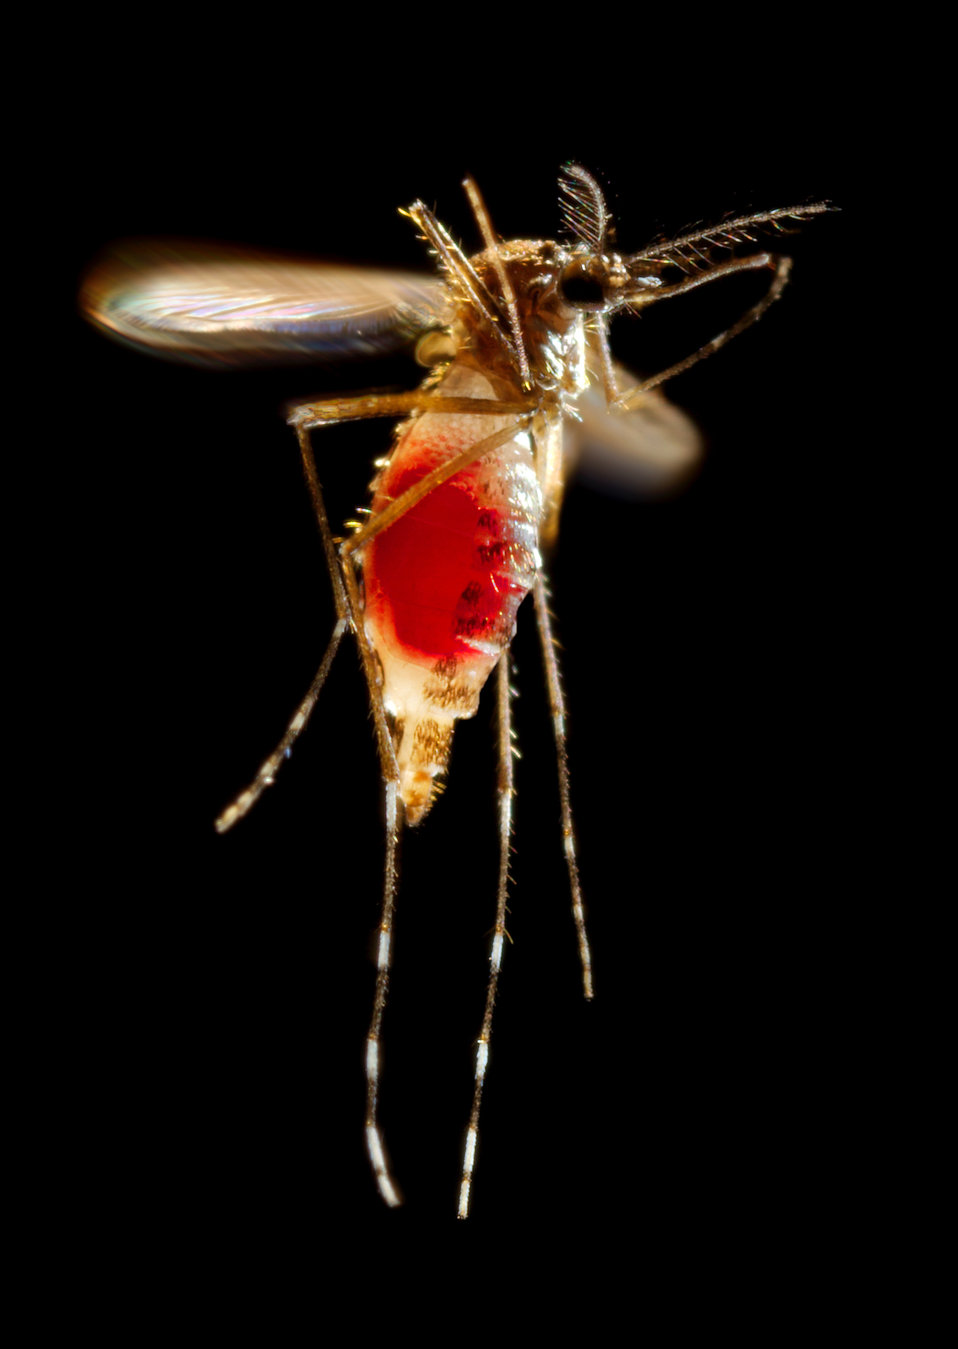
With a newly-obtained fiery red blood meal visible through her now transparent abdomen, the now heavy female Aedes aegypti mosquito takes flight as she leaves her host's skin surface. In this case, what would normally be an unsuspecting host was actually the CDC's biomedical photographer's own hand, which he'd offered to the hungry mosquito so that she'd alight, and be photographed while feeding. After having filled with blood, the abdomen became distended, stretching the exterior exoskeletal surface, causing it to become transparent, and allowed the collecting blood to become visible as an enlarging intra-abdominal red mass. The wings seem to be working overtime in order to keep her aloft.